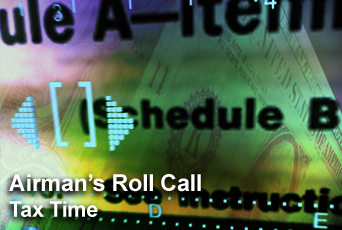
Airman's Roll Call highlights tax time

This week's Airman's Roll Call focuses on filing your taxes and the assistance available to Airmen.